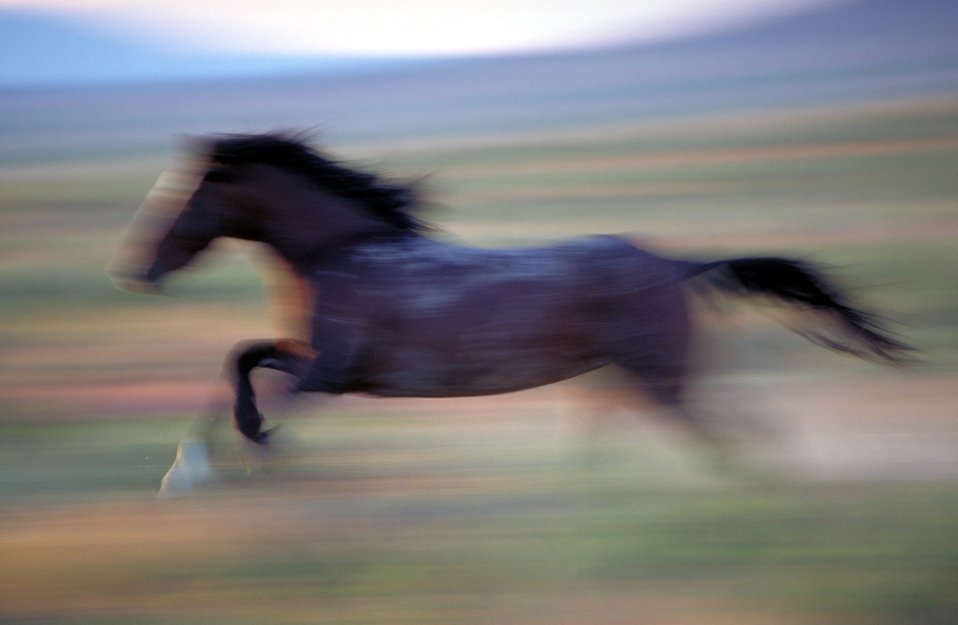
Onaqui Herd near Dugway, Utah.